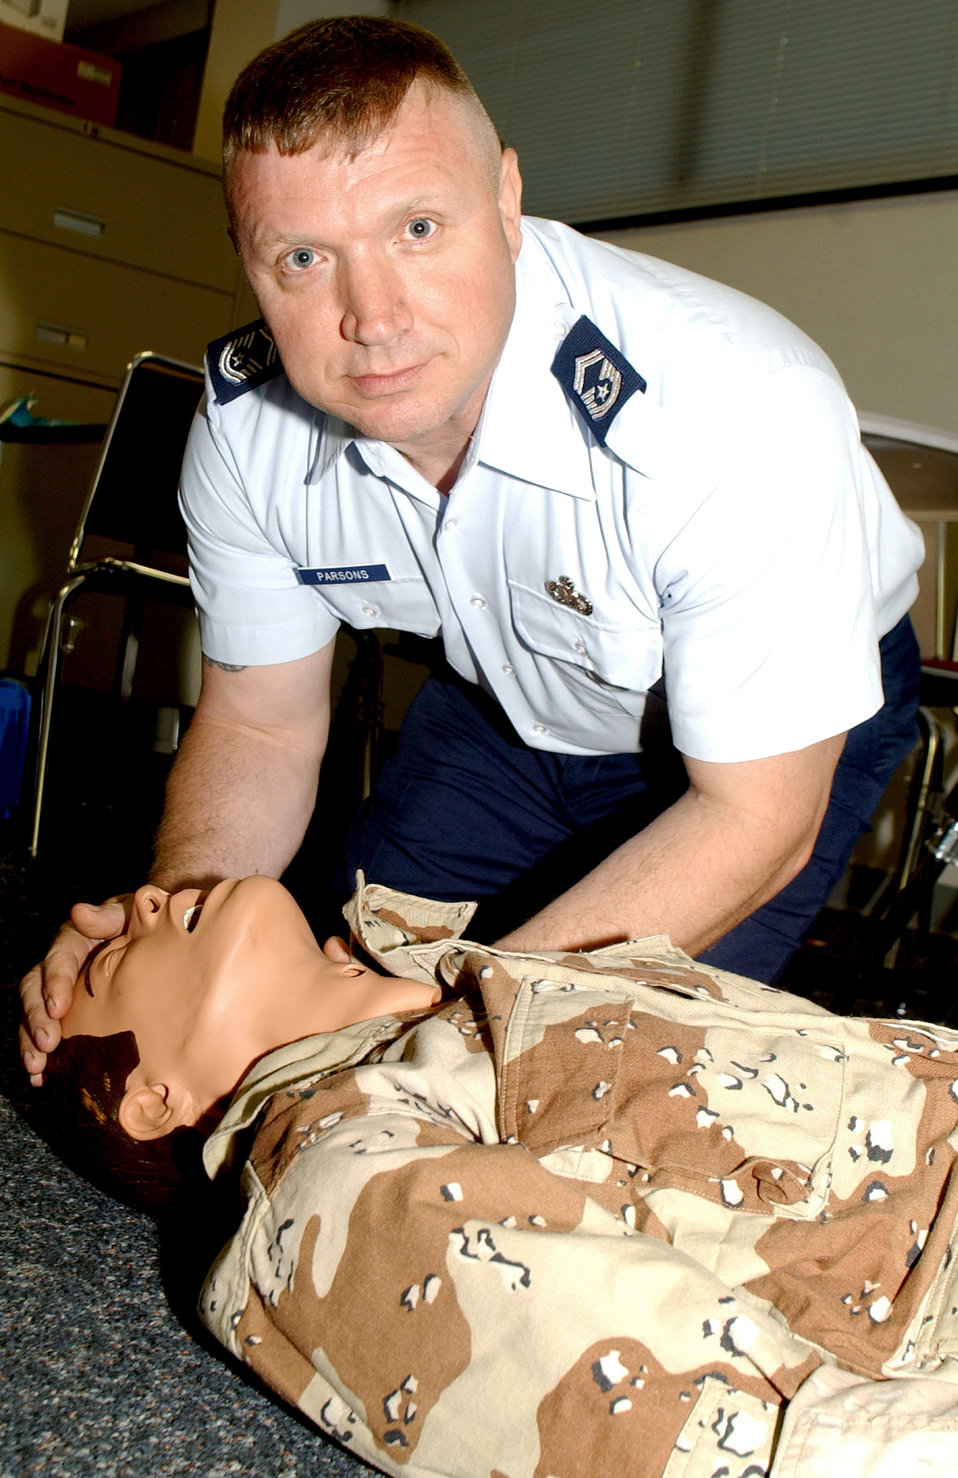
Life saver

HARRISBURG, Penn. -- Senior Master Sgt. Glenn Parsons demonstrates CPR on a resuscitation mannequin. He used his self-aid and buddy-care training to give CPR to a man who had suffered an apparent heart attack.